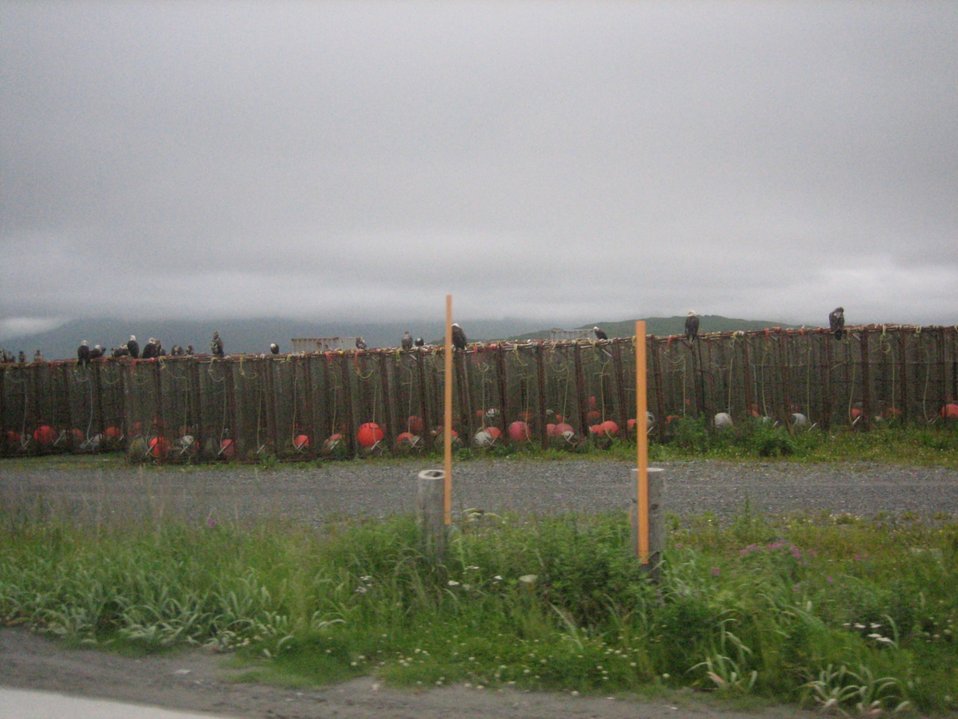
Looks like a good home for lazy eagles picking fish remains off drying nets.